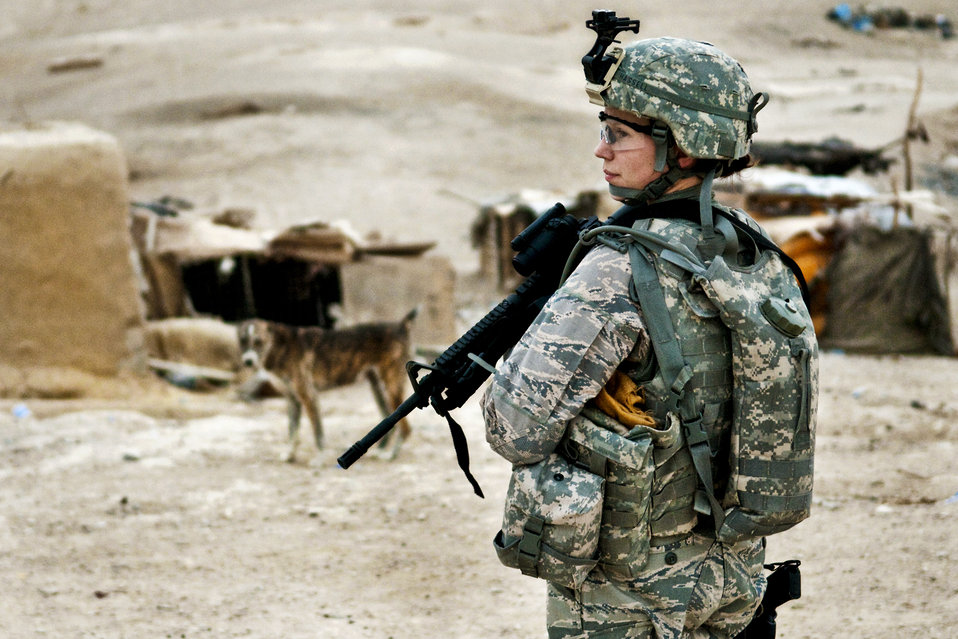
All quiet here

First Lt. Georganne Hassell, an information operations officer with Provincial Reconstruction Team Zabul, walks down a street July 23, 2010, during a presence patrol in Qalat City, Afghanistan.